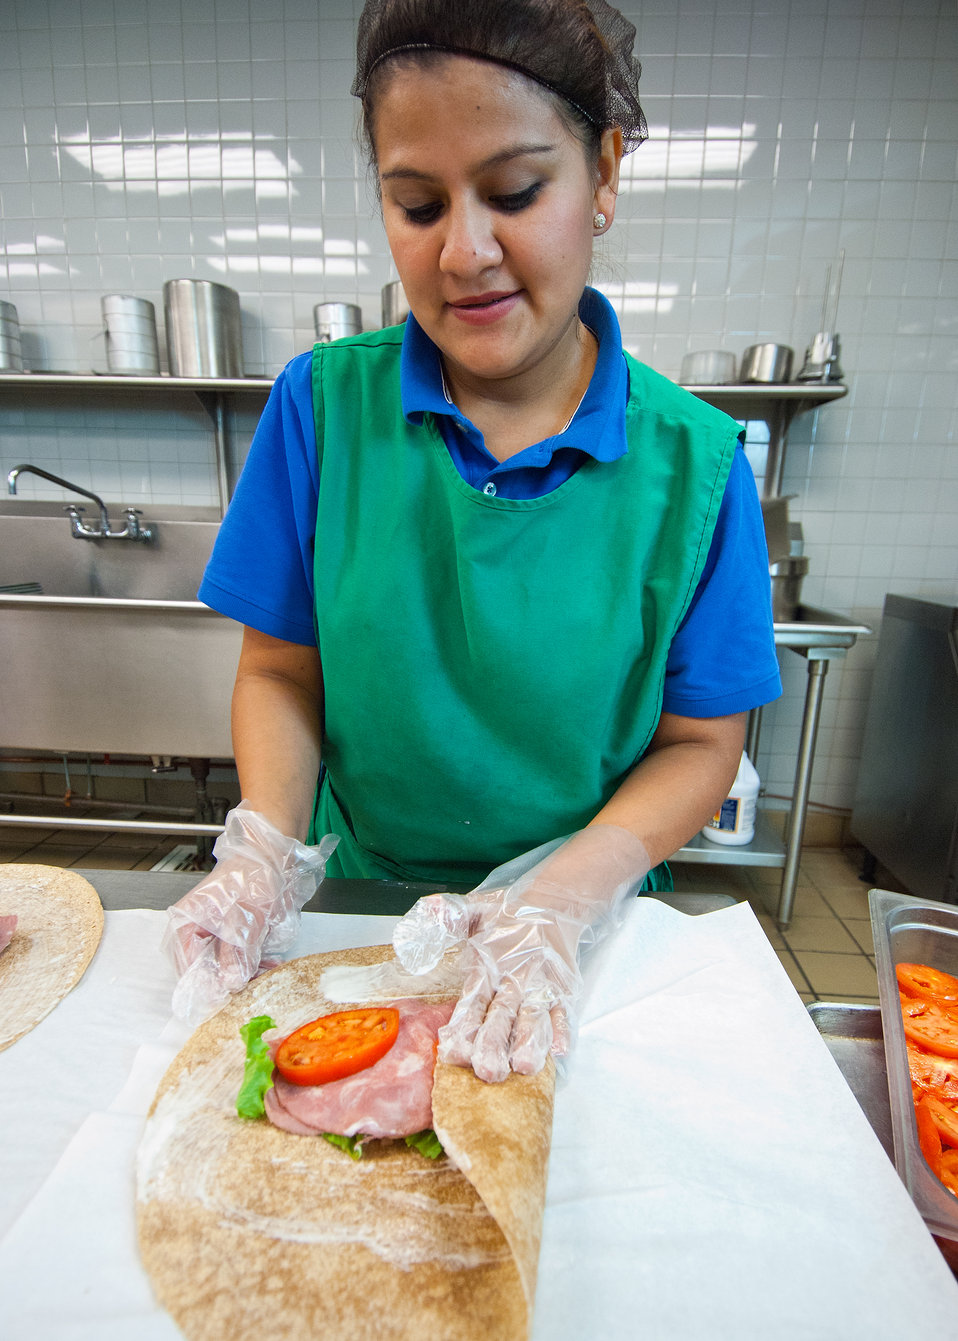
Candy Flores, Arlington Food Services prepares ham and cheese wraps for the National School Lunch Program in the kitchen at Washington-Lee High School in Arlington, Virginia, on Wednesday, October 19, 2011. The National School Lunch Program is a federally assisted meal program administered by the United States Department of Agriculture, Food and Nutrition Service operating in public, nonprofit private schools and residential child care institutions. It provides nutritionally balanced, low-cost or free lunches to children each school day.